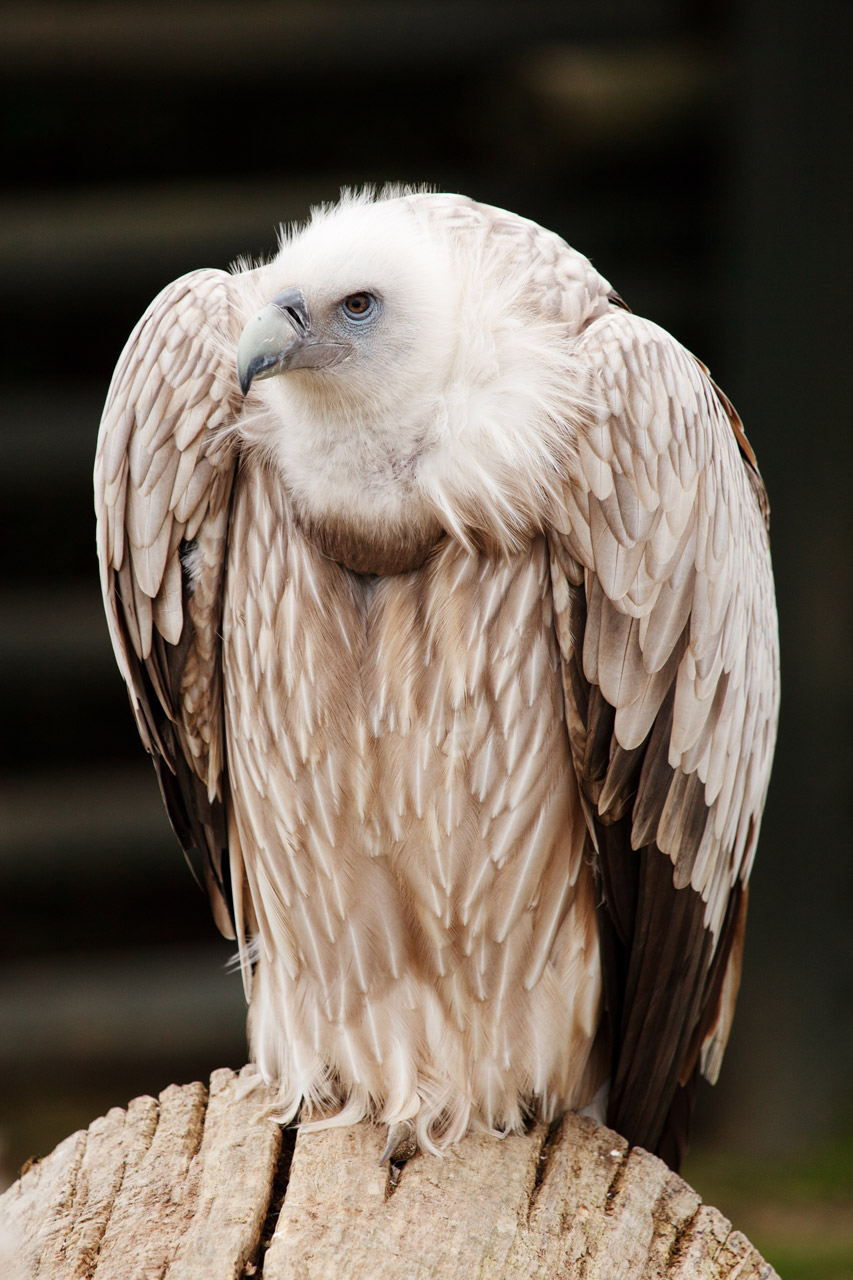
Vulture sitting

Vulture bird sitting.